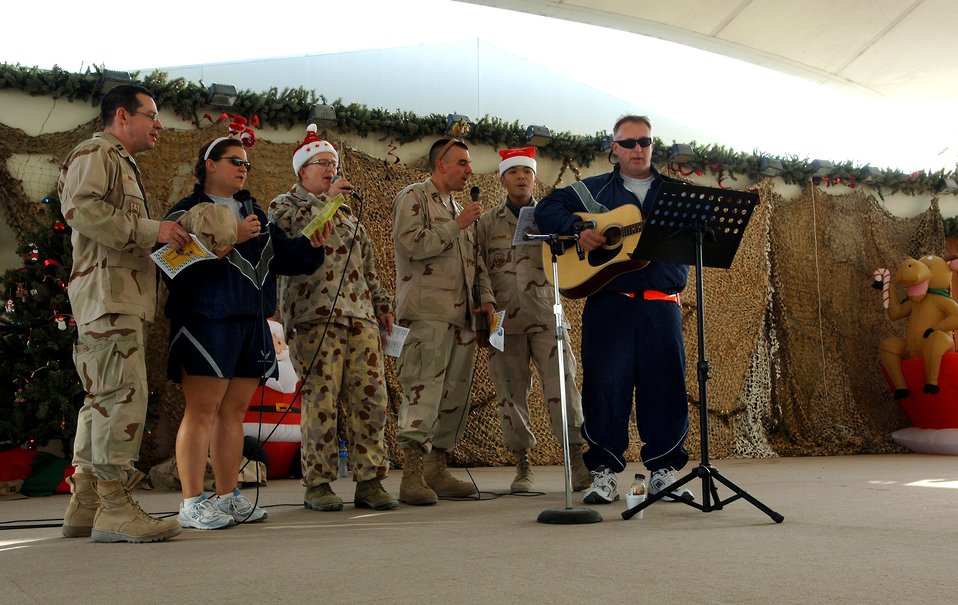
Deployed Airmen enjoy holidays

Chaplain (Capt.) Jason English (from left), Maj. Tracey Birri, Royal Air Force member Sarah Clark, Capt. Deric Prescott, Capt. Ray Galdiano and Senior Master Sgt. Dan DeMers sing classic holiday songs to a breakfast crowd at Memorial Plaza Dec. 25 at a Southwest Asia air base.